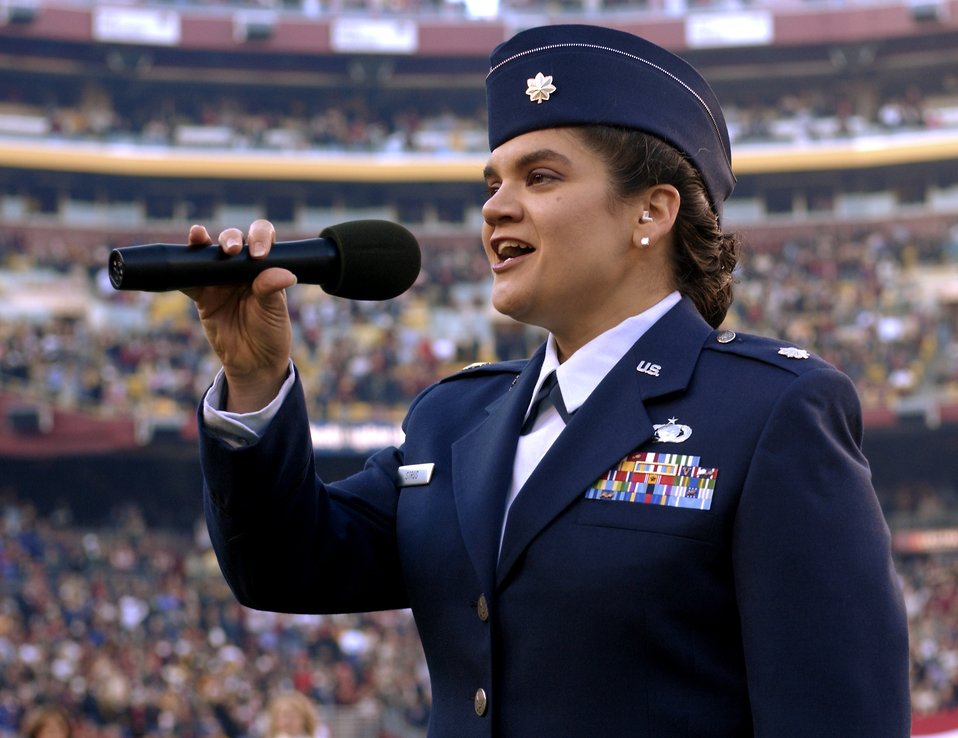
Air Force participates in Veterans Day tribute at Redskins' game

LANDOVER, Md. -- Maj. Katherine Strus sings the national anthem during opening ceremonies at the Washington Redskins vs. Cincinnati Bengals football game here Nov. 14. It was part of a Veterans Day salute to the Air Force. Major Strus is assigned to the Air Force's legislative liaison office at the Pentagon.